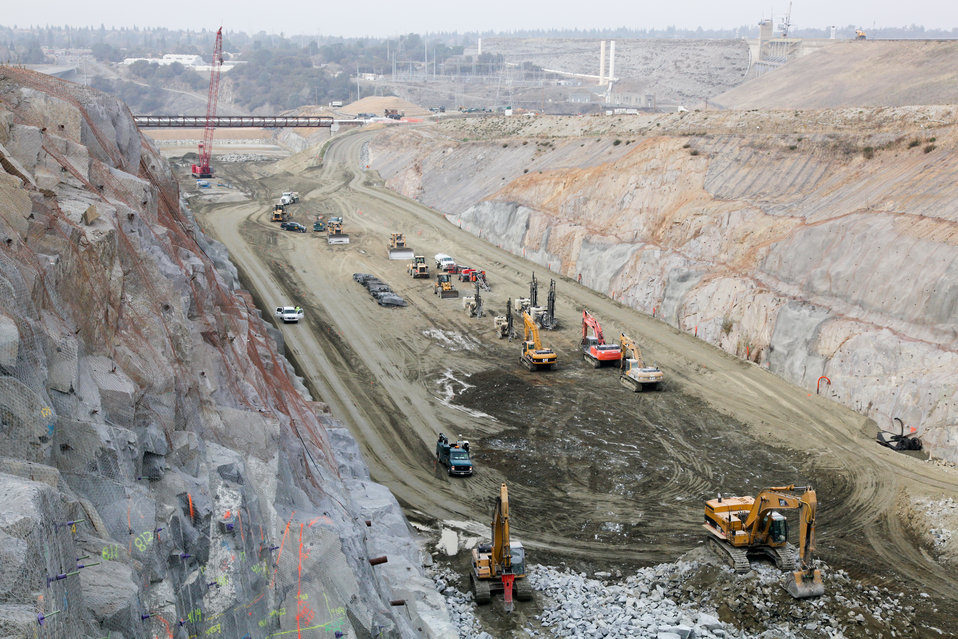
Excavation and rock reinforcement continues at Folsom Joint Federal Project

Excavation of Folsom Dam’s new auxiliary spillway continues in Folsom, Calif., Dec. 29, 2011. The spillway will allow Folsom Dam to release water sooner and more safely. The project is part of the Folsom Dam Joint Federal Project, a joint effort of the U.S. Army Corps of Engineers Sacramento District, the U.S. Bureau of Reclamation, the Central Valley Flood Protection Board and the Sacramento Area Flood Control Agency to improve the safety of the dam and reduce flood risk for the greater Sacramento area.